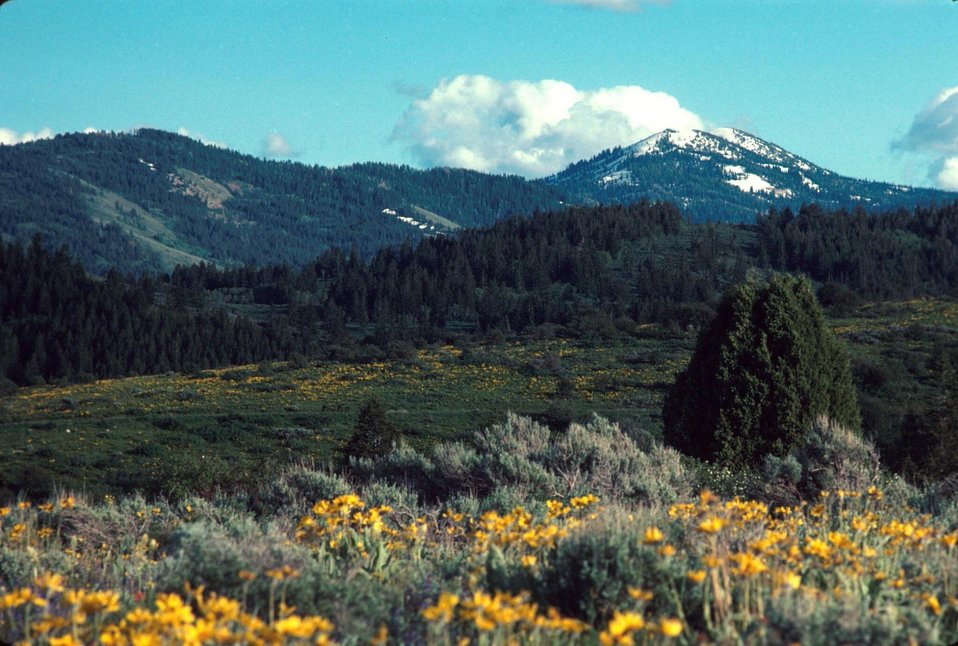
Meade Peak Pocatello Field Office USRD Upper Snake River District